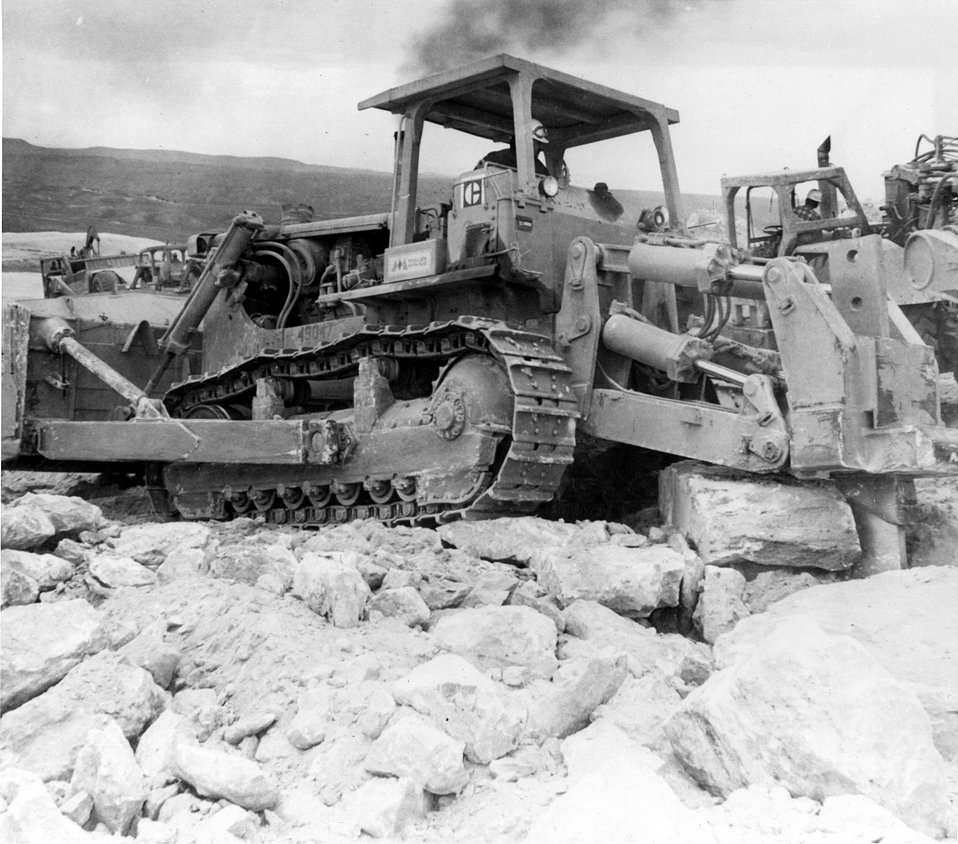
Mullen Mining men and equipment have worked in every mining region of Wyoming moving millions of yards of overburden. Here Mullen Cats work on a stripping-ripping job in the West Gas Hills of Fremont County, Wyoming. c. 1976